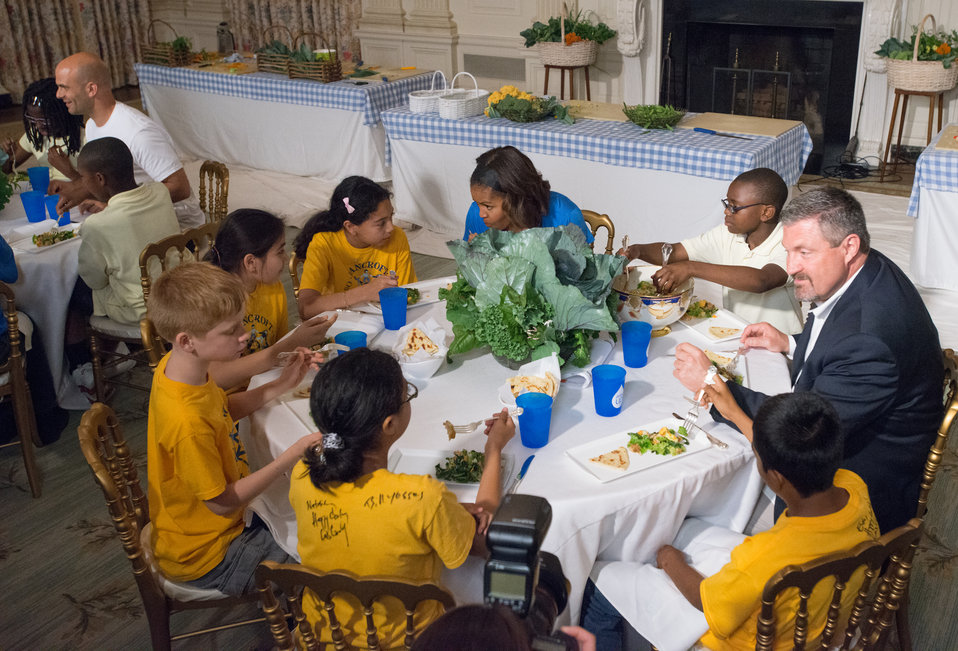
First Lady Michelle Obama and West Virginia Department of Education Office of Child Nutrition Executive Director Richard Goff have lunch with Washington, D.C. students from Cleveland Elementary School, Friendship Public Charter School, Kimball Elementary School, Bancroft Elementary School, and Harriet Tubman Elementary School in the State Dining Room of the White House in Washington, D.C. on Thursday, Jun. 12, 2014. The students, who helped plant the garden in the spring, made lunch from this year’s summer crop with the help of White House chefs and visiting school nutrition directors from Orlando, FL, Dallas, TX, and West Virginia.